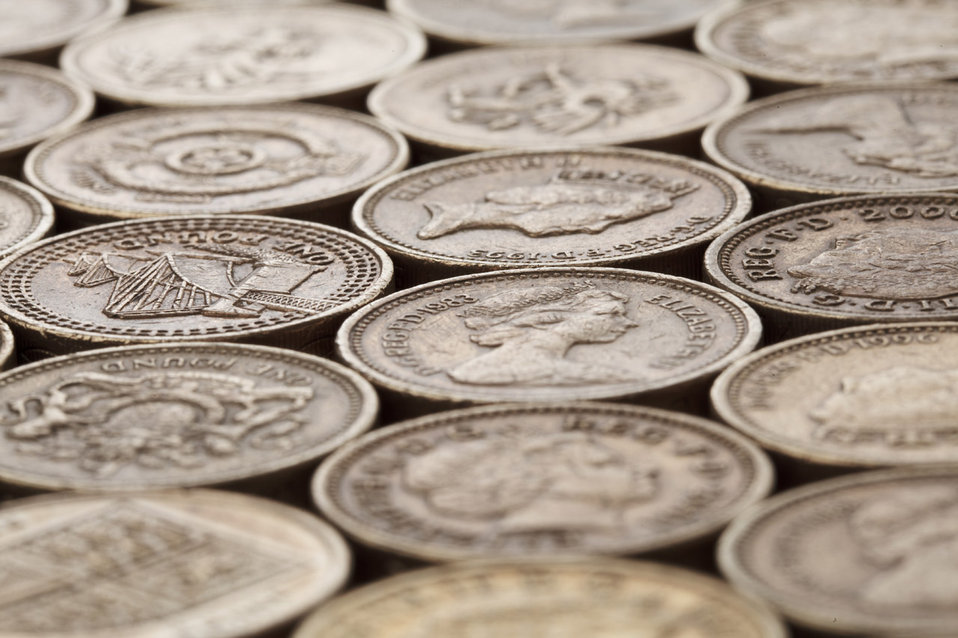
Coin background

One pound coins creating and interesting money background.